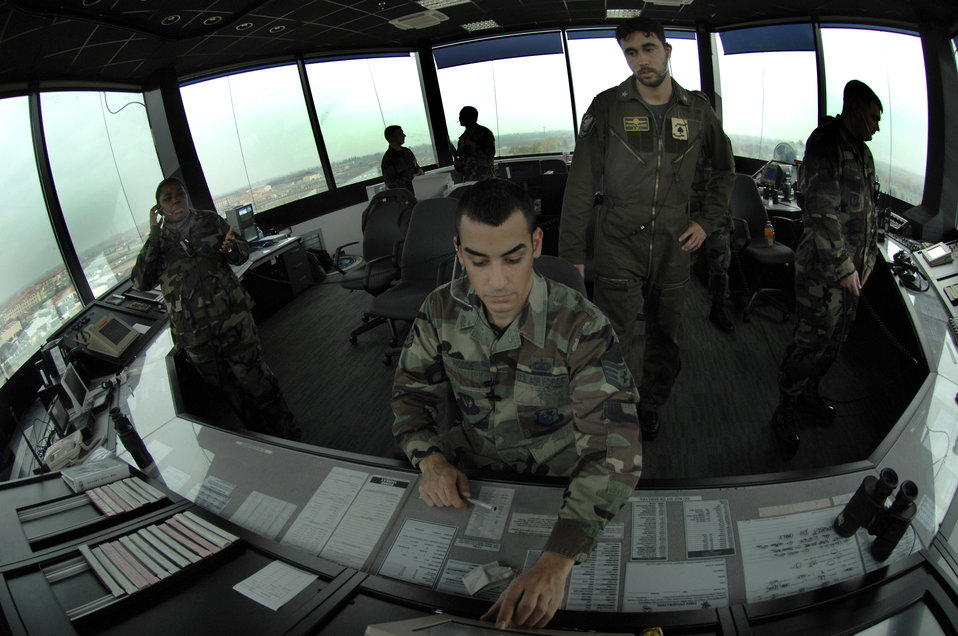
Tower stays on top of things

Staff Sgt. Dustin Hodde coordinates the flight plans of multiple aircraft while Italian air force Air Traffic Controller Supervisor Ippolito Maurizio looks on Nov. 28 at Aviano Air Base, Italy. Air traffic controllers perform duties within a radar facility and maintain radar surveillance of approach control airspace, processing and coordinating aircraft through terminal control. Sergeant Hodde is assigned to the 31st Operations Support Squadron.